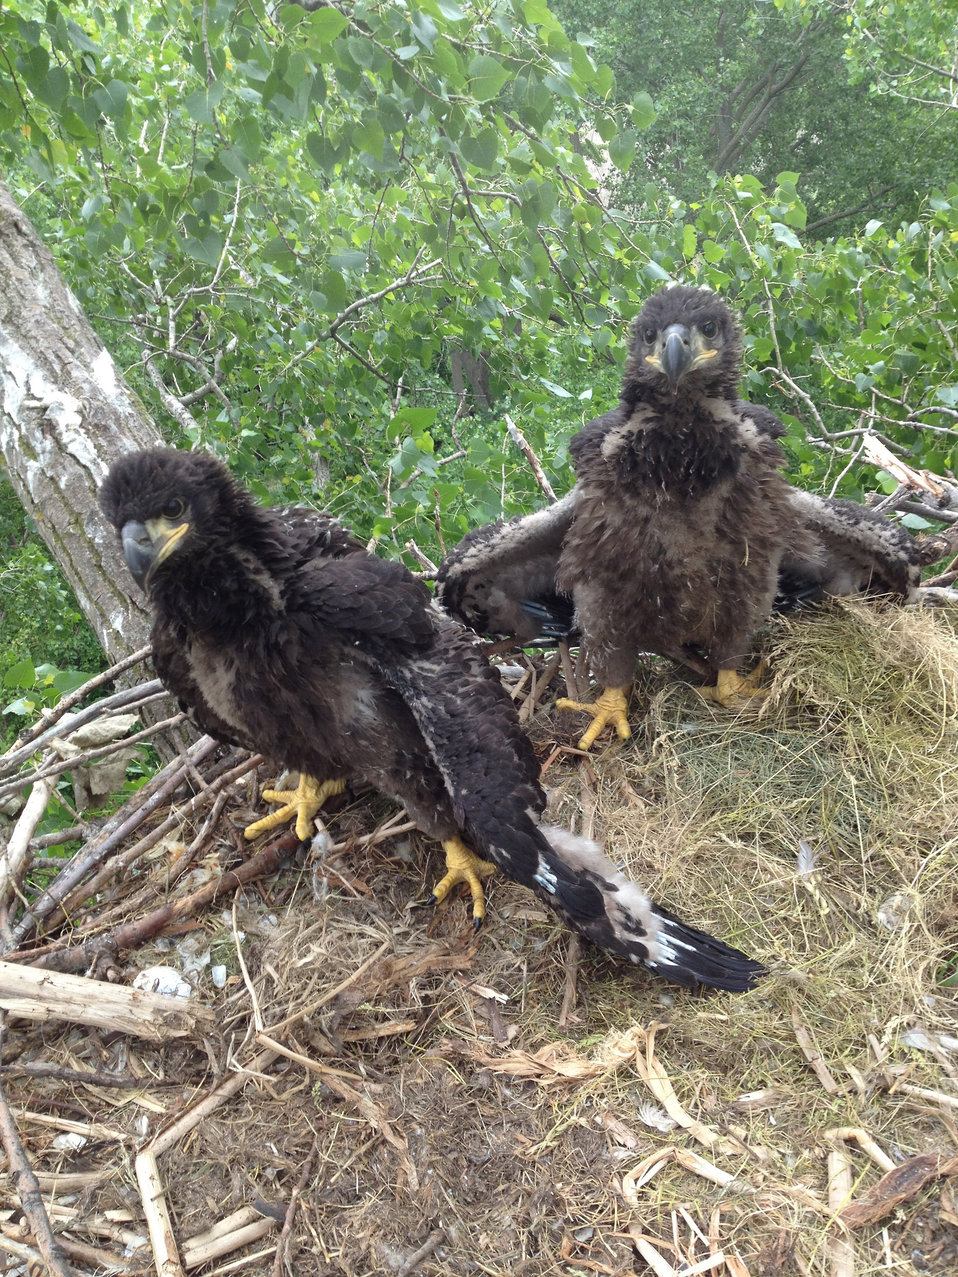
2 Eaglets by USFWS Jeremy N. Moore

Bald eagle eaglets June 7, 2013.

Photo by USFWS; Jeremy N. Moore